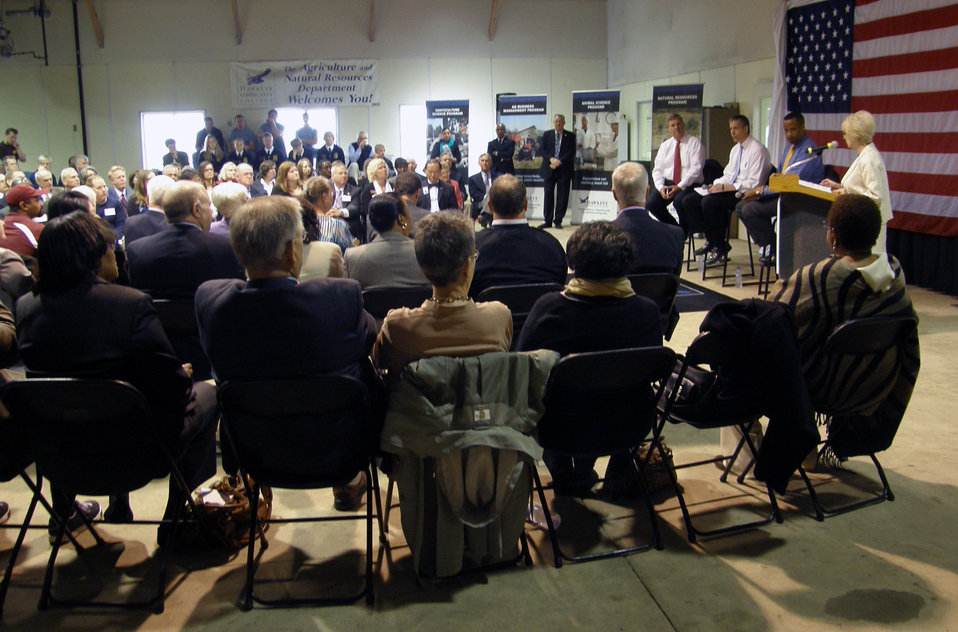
Agriculture Secretary Tom Vilsack spoke to audiences in Waterloo and Cedar Rapids, IA on Thursday, April 19, 2012, where he highlighted the importance of agriculture and rural America to the economic recovery and strength of the nation. Ranchers and growers are some of America’s greatest assets and are responsible for one out of every 12 jobs. Secretary Vilsack highlighted ways the U.S. Department of Agriculture (USDA) and the Obama Administration have worked to improve the lives of rural Americans and increased growth in the agricultural economy over the past three years. USDA has developed new markets at home and abroad while continuing to maintain a strong safety net, invested in conservation and research, and encouraged the next generation of farmers.